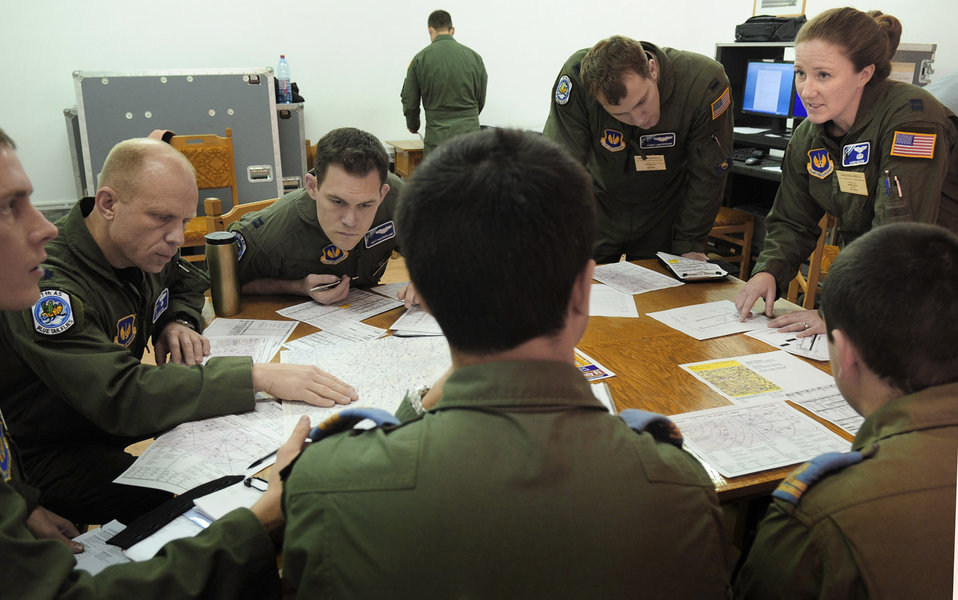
Carpathian Spring 2011

Capt. Marcie Walton delivers information to crews of multiple C-130J Super Hercules and their Romanian counterparts, during a pre-flight briefing March 14, 2011, at Airlift Base Otopeni, Romania. Captain Walton is assigned to the 37th Airlift Squadron. She is serving as the chief of tactics during Carpathian Spring 2011, an exercise where members of the U.S. military join their Romanian counterparts to learn from one another and strengthen alliances.